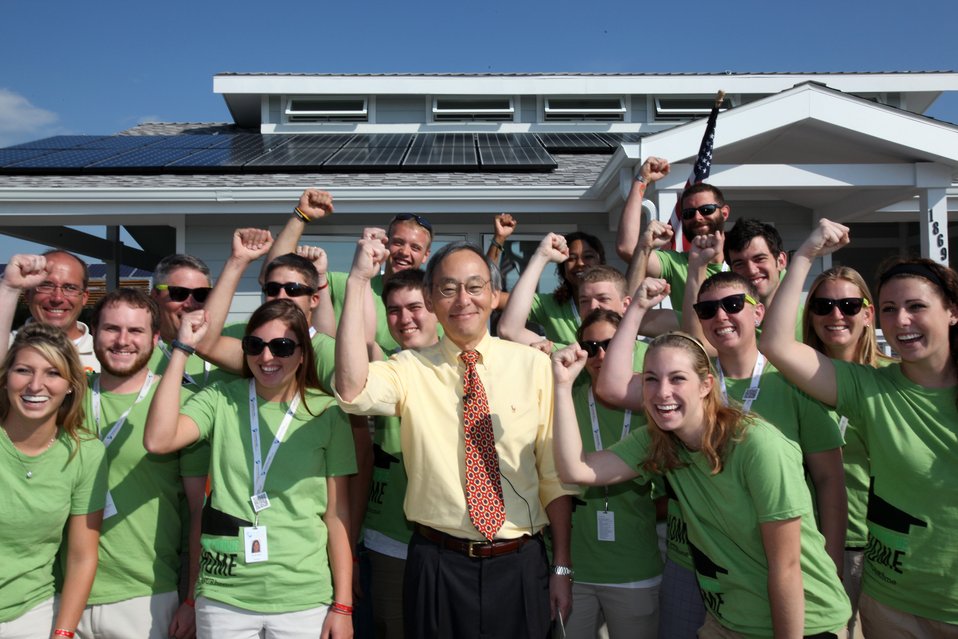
Energy Secretary Chu Visits Purdue's Solar Decathlon House

Purdue University students cheer with U.S. Energy Secretary Steven Chu outside their entry in the U.S. Department of Energy Solar Decathlon 2011 in Washington, D.C., Friday, Sept. 30, 2011.